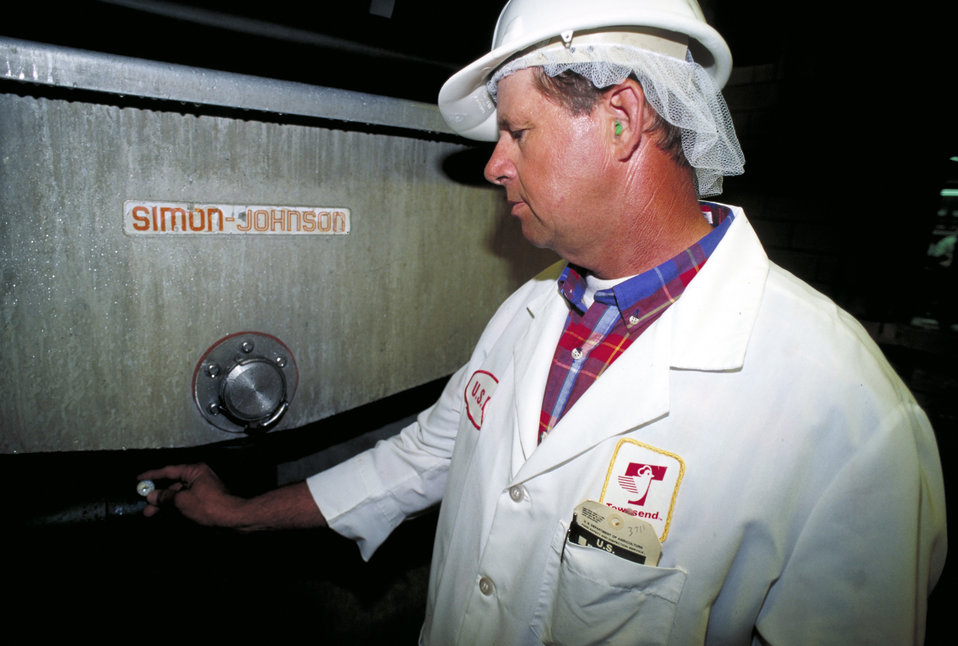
U.S. Department of Agriculture (USDA) Food Safety Inspection Service (FSIS) inspector checks the water temperature of a poultry chiller to compare it with those measured and recorded by the plant to prevent multiplication of pathogenic bacteria in compliance with Hazard Analysis and Critical Control Points (HACCP) issued by FSIS on May 13, 1996. USDA photo Bob Nichols.